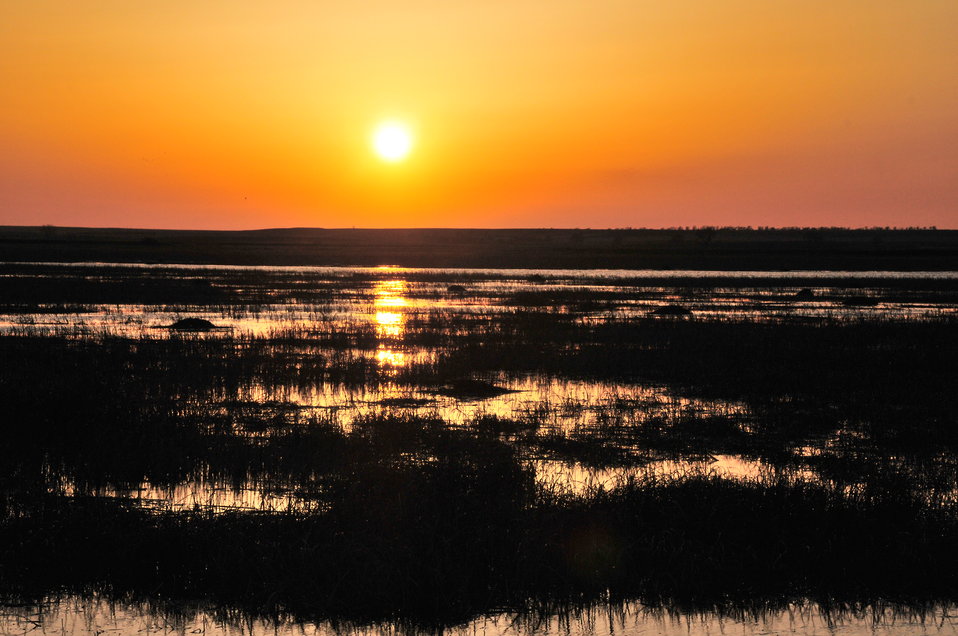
Pool 8 at sunset, Sand Lake National Wildlife Refuge

Sand Lake NWR in South Dakota. Models biologists to better manage habitat today, with the goal of conserving it for tomorrow given the onset of climate change.